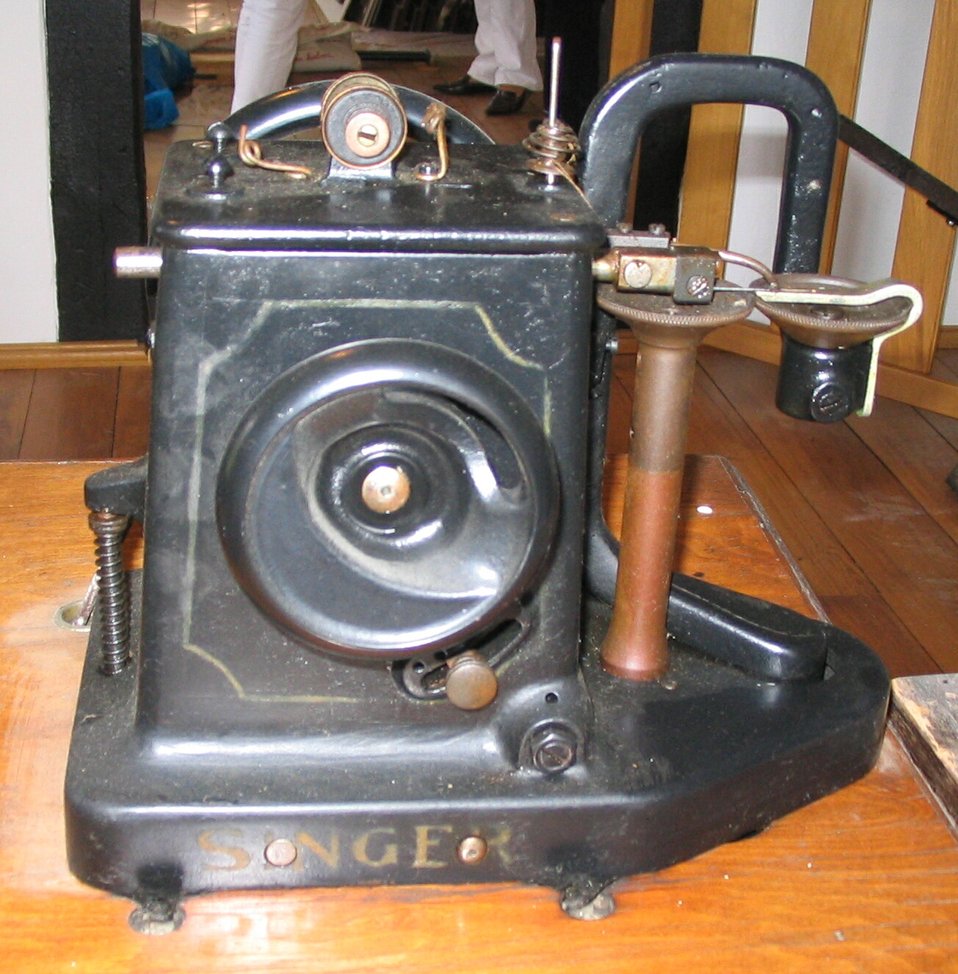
Deutsch: Pelznähmaschine, Hersteller Singer (Westfälisches Freilichtmuseum Hagen)